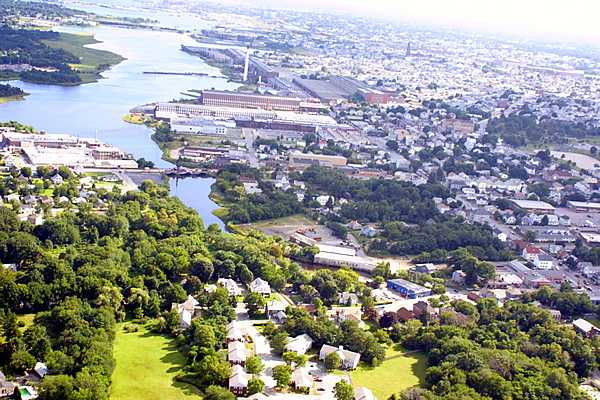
Aerial View, Acushnet and New Bedford, Mass. Upper New Bedford Harbor